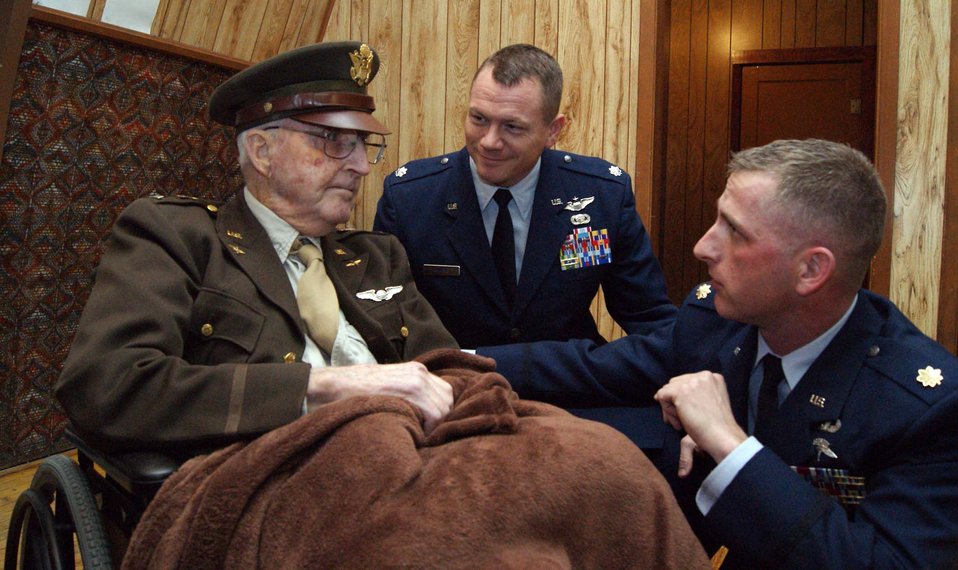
World War II hero receives medals after 65 years

Gordon Ballagh (left to right), a World War II veteran, Lt. Col. Stan Lawrie and Maj. Darrin DeReus pose for photograph just before a ceremony Feb. 9, 2011, in Burwell, Neb. The ceremony was in honor of Mr. Ballagh, who received a Prisoner of War Medal, the World War II Victory Medal, the American Campaign Medal and the Euro-African-Middle Eastern Medal, after more than 65 years. Colonel Lawrie is the 22nd Air Refueling Wing Safety chief. Major DeReus is the 22nd Comptroller Squadron commander.